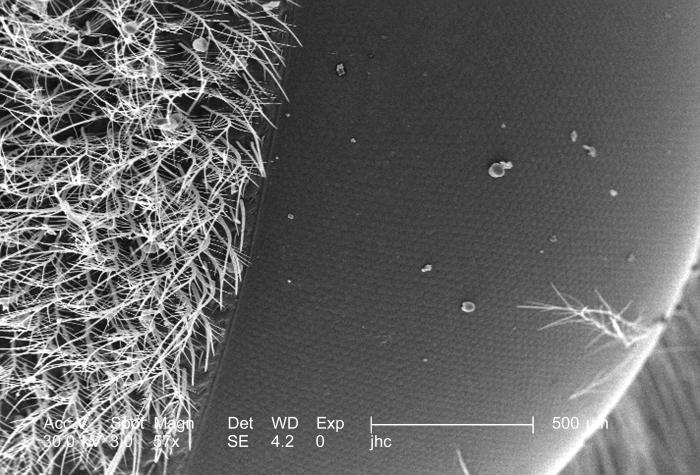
Under a low magnification of only 57x, this scanning electron micrograph (SEM) depicted some of the ultrastructural morphologic features displayed on the surface of a carpenter bee's, Xylocopa virginica head. This particular bee was found deceased on the grounds of the Decatur, Georgia suburbs, an area where these insects are quite common. Carpenter bees can be quite a nuisance, for they are well known as wood-borers, and can create many unsightly holes in a home's wooden components.The "feathery" structures are known as "setae", and though they appear frail, the material from which they are constructed, known as "chitin", is the same proteinaceous material that created its tough exoskeletal exterior. These setae, are highly sensorial in nature, and transmit changes in the bee's environment such as fluctuations in temperature, chemistry, and wind speed and direction.